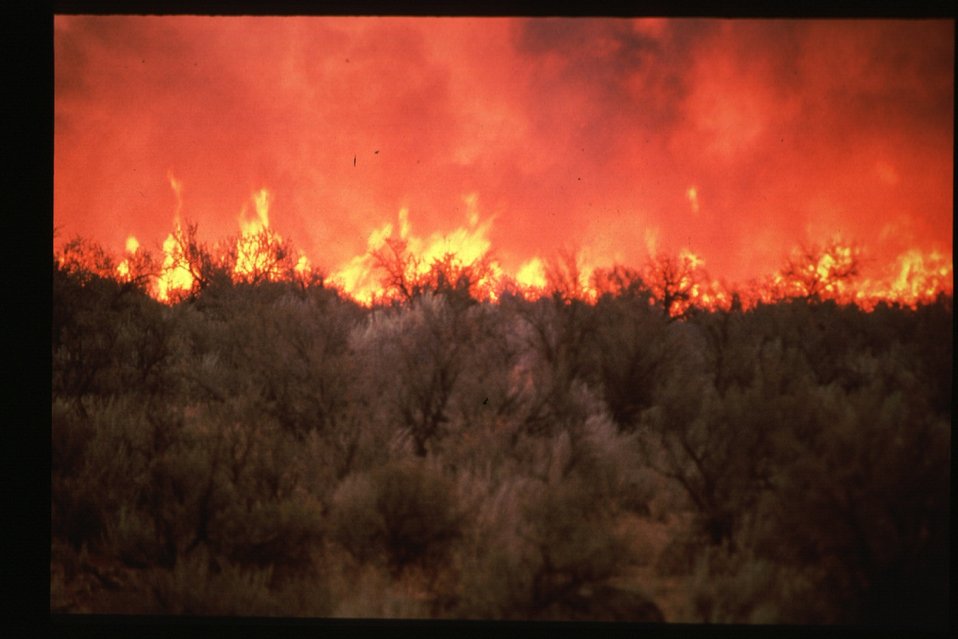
Boise Foothills Fire Danskin Mountains and South Fork of Boise River Four River Field Office LSRD Lower Snake River District